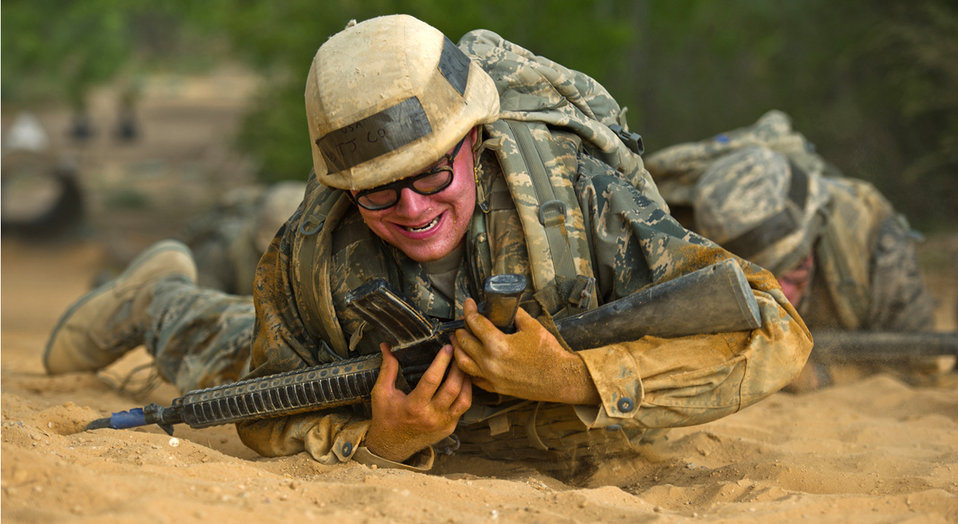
Bring out the CLAW

A basic trainee low crawls through an obstacle course during the Creating Leaders, Airmen and Warriors course July 27, 2011, at Medina Annex in San Antonio, Texas. CLAW is a three-hour, mission-oriented exercise designed to test teamwork, leadership skills and the ability to perform under pressure while combined with BMT trainees from other flights.